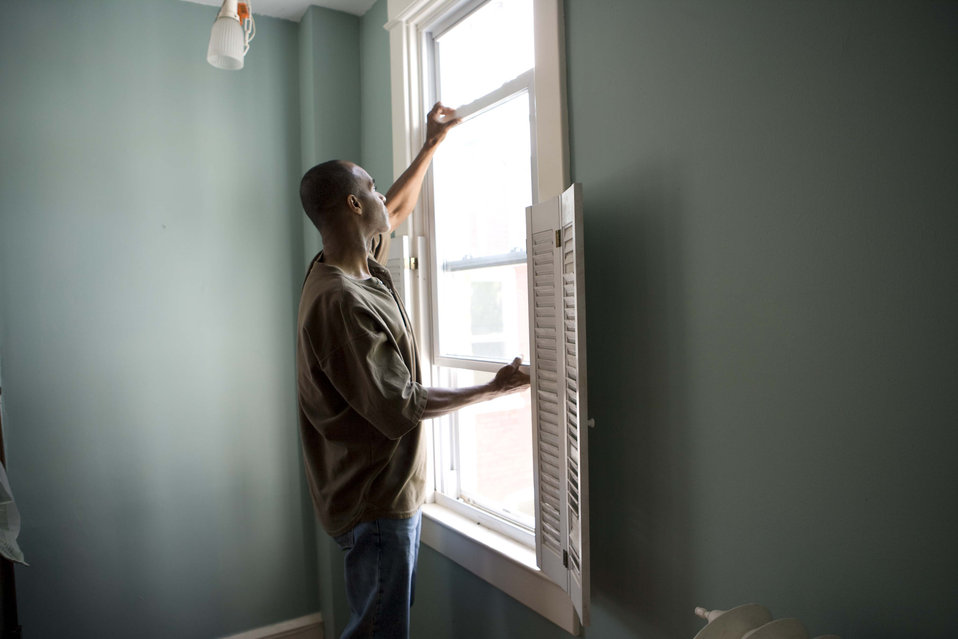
When renovating a home, you should use a damp sponge or cloth to clean dust collected on a window sill, as the dust may contain asbestos or lead-based paint. Home maintenance is an ongoing process for any homeowner, and here we see an African-American man as he was preparing a window in his home for a general cleaning.